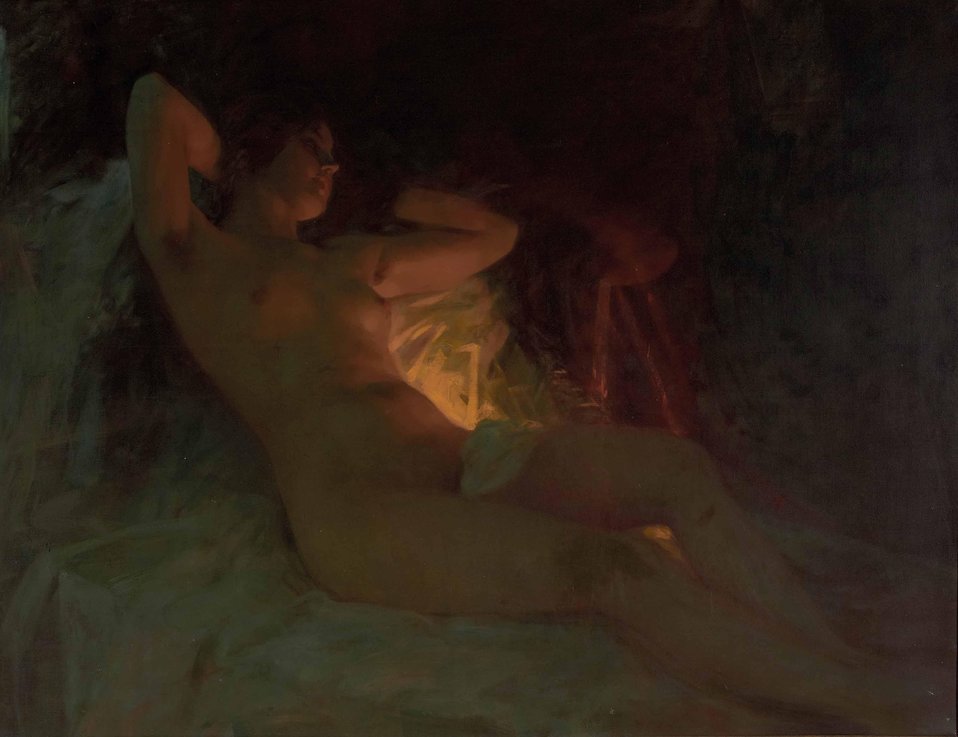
Albert Ritzberger (attr) Akt